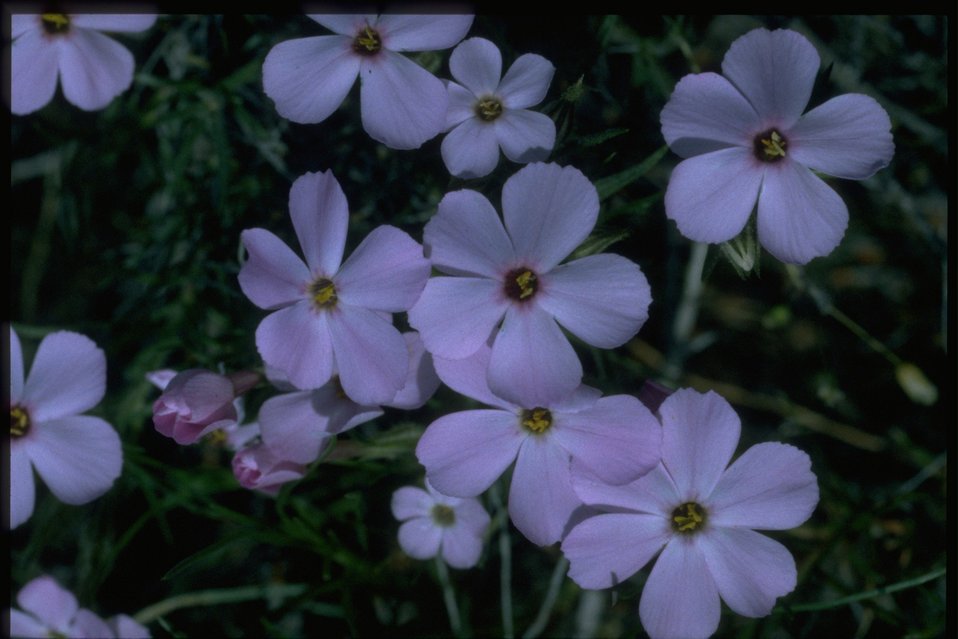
Medium shot of Phlox wildflowers.l